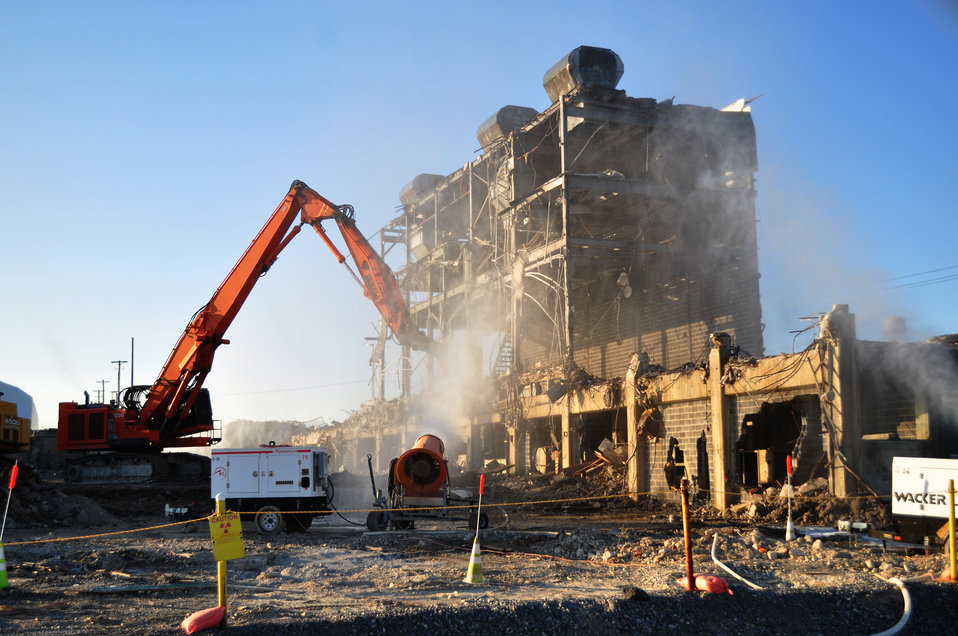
4

K-25 North Tower